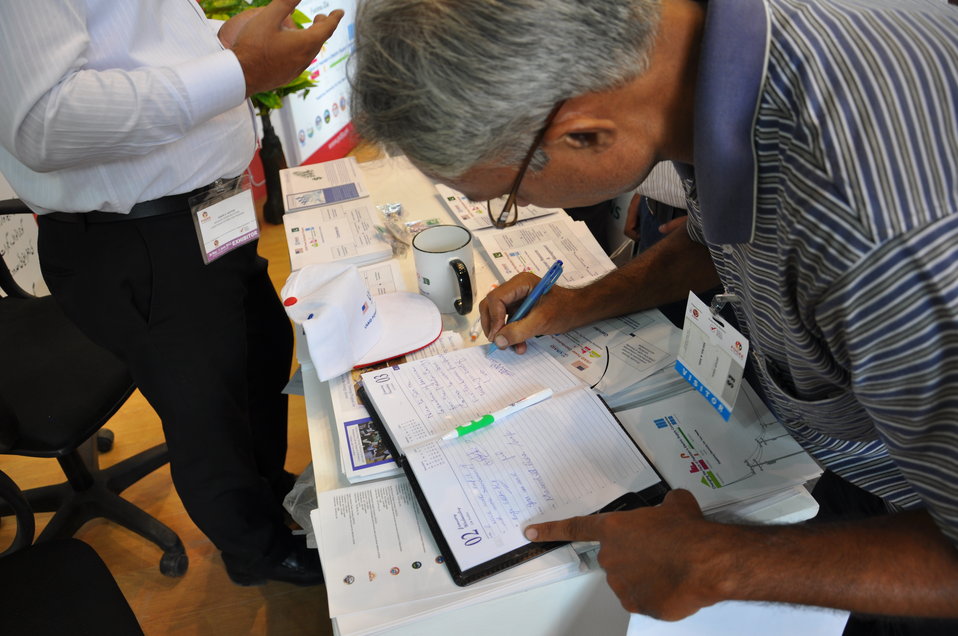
USAID participates in 11th International Pakistan Oil Gas Energy Exhibition

Visitors registering their suggestions and feedback at the USAID Power Distribution Program's booth,